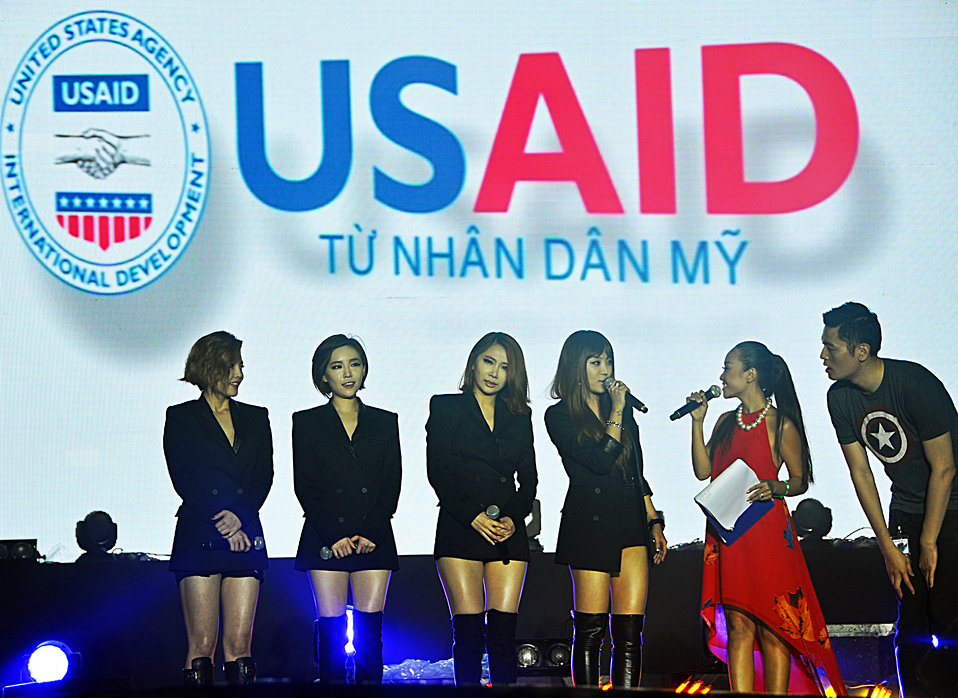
Brown Eyed Girls carry awareness message at MTV EXIT concert against human trafficking and exploitation

USAID supports MTV EXIT concert against human trafficking and exploitation